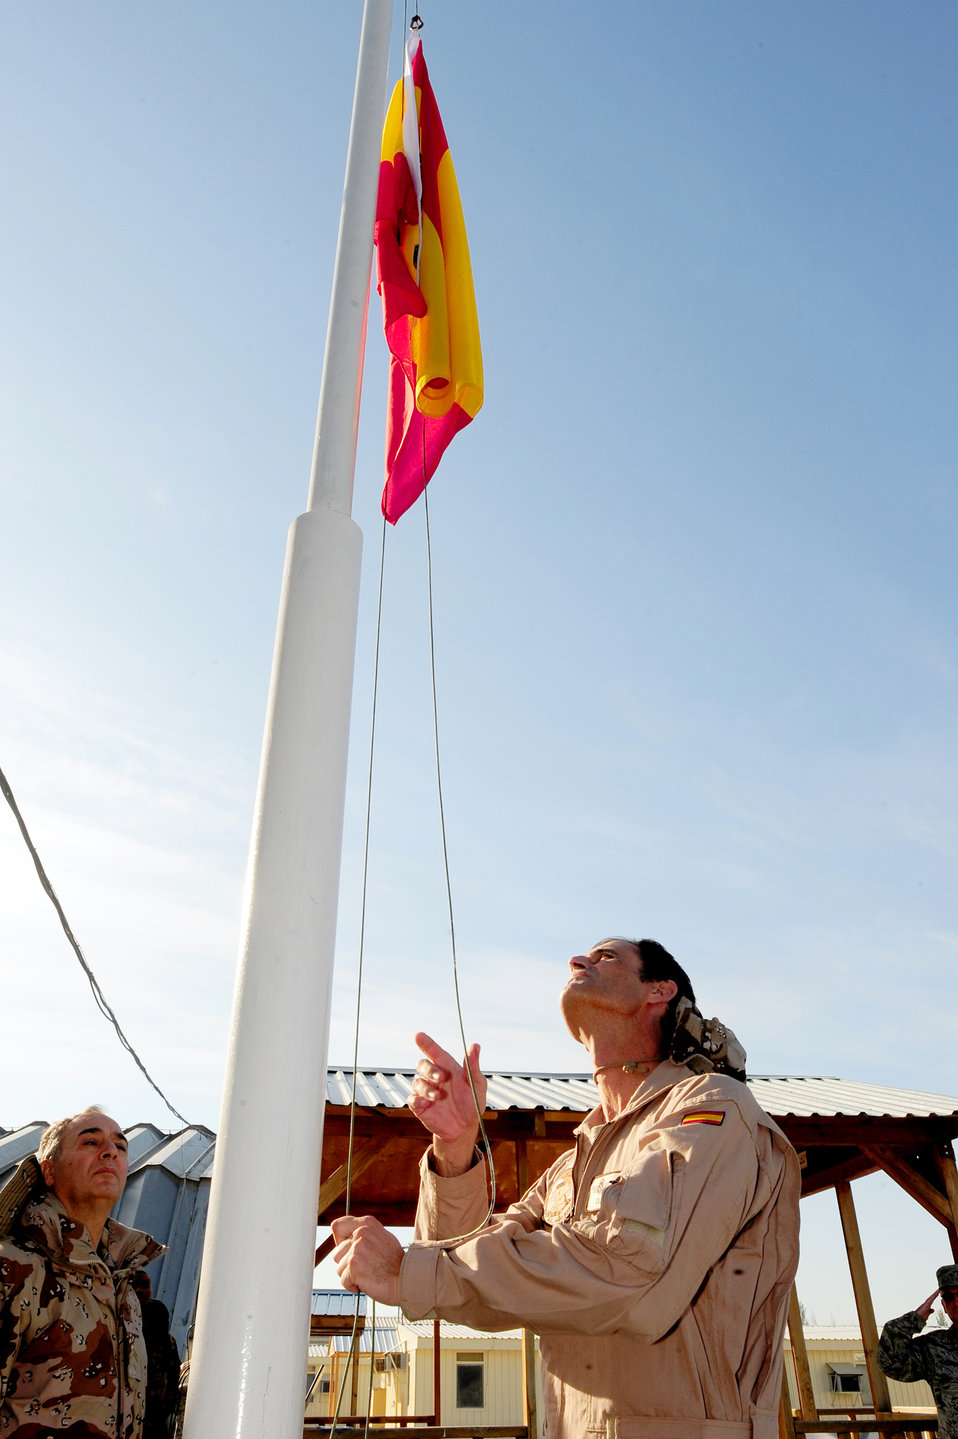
Airmen bid farewell to Spanish forces at Transit Center at Manas

Maj. Miguel Oliver lowers the Spanish flag signifying a halt in operations Oct. 13, 2009, at the Transit Center at Manas, Kyrgyzstan. Major Oliver is the Spanish air force Mizar Detachment commander.